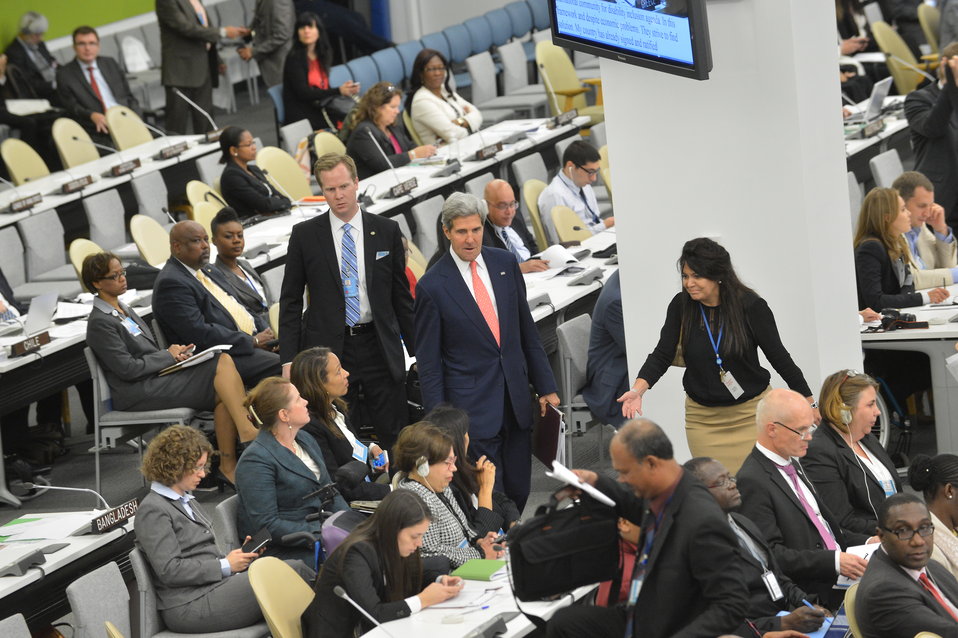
Secretary Kerry Arrives at the United Nations

U.S. Secretary of State John Kerry arrives at the United Nations to participate in a high level meeting of the United Nations General Assembly on disability and development in New York City on September 23, 2013.